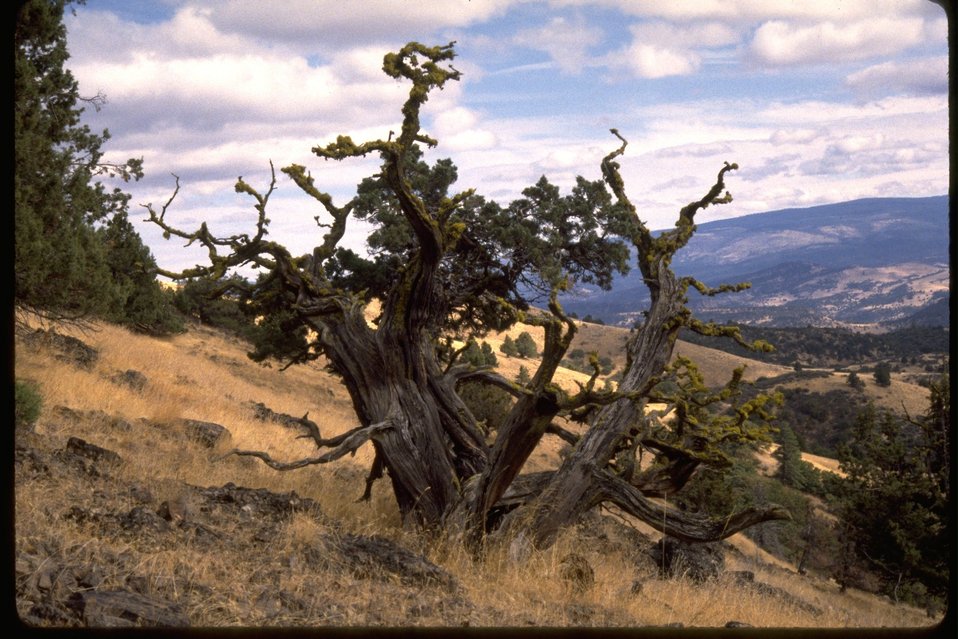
A dying tree in the Scotch Creek RNA.